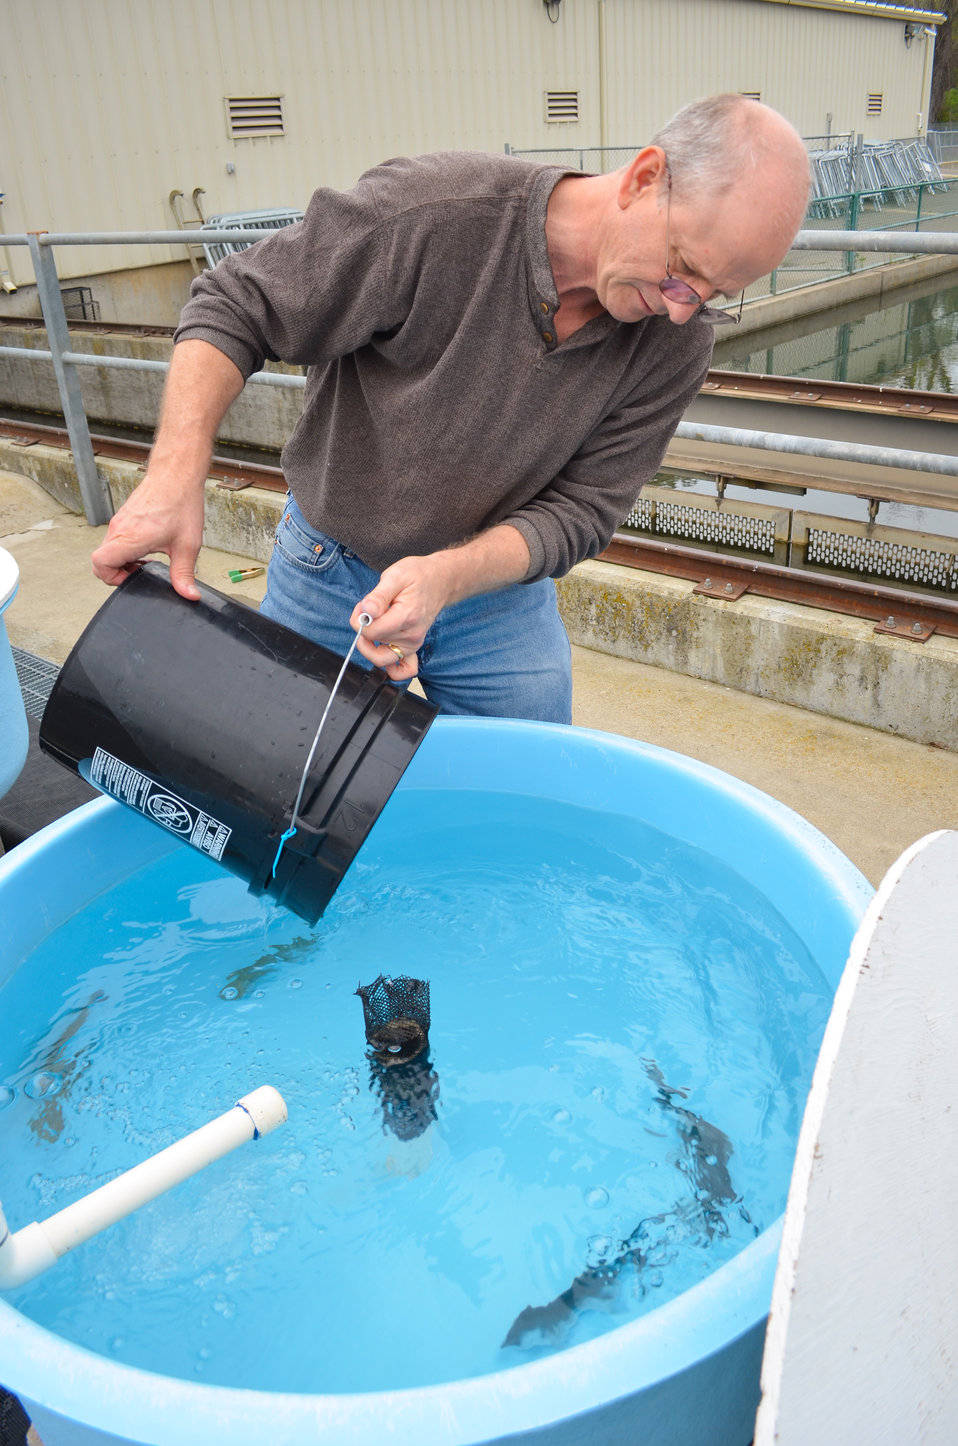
Tagged fish observed 24 hours prior to release

Brian Luke, a biologist for the U.S. Army Corps of Engineers Sacramento District, places recently tagged steelhead trout into an observation tank March 25, 2013, at Coleman National Fish Hatchery in Anderson, Calif. Luke and other researchers will study the behavior of 250 steelhead trout and late-fall Chinook salmon juveniles over a 75-mile stretch of the Sacramento River in order to better evaluate habitat restoration work under the Sacramento River Bank Protection Project, a joint flood risk reduction effort between the district and the state's California Central Valley Flood Protection Board to repair riverbank erosion along the Sacramento River and its tributaries.